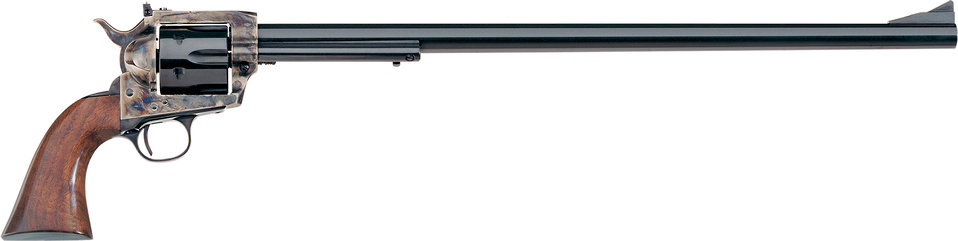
1873 Buntline Target